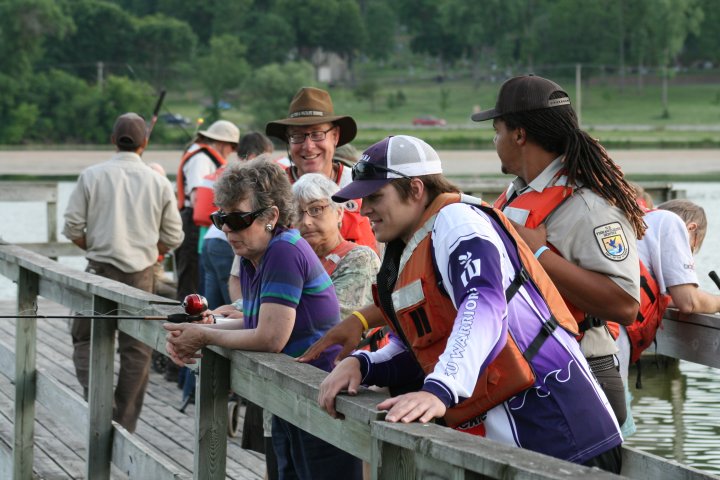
Winona District Staff and volunteers assist with fishing event

Winona District staff and volunteers assist Project COMPASS clients during a fishing event held at Lake Winona, Winona, MN.